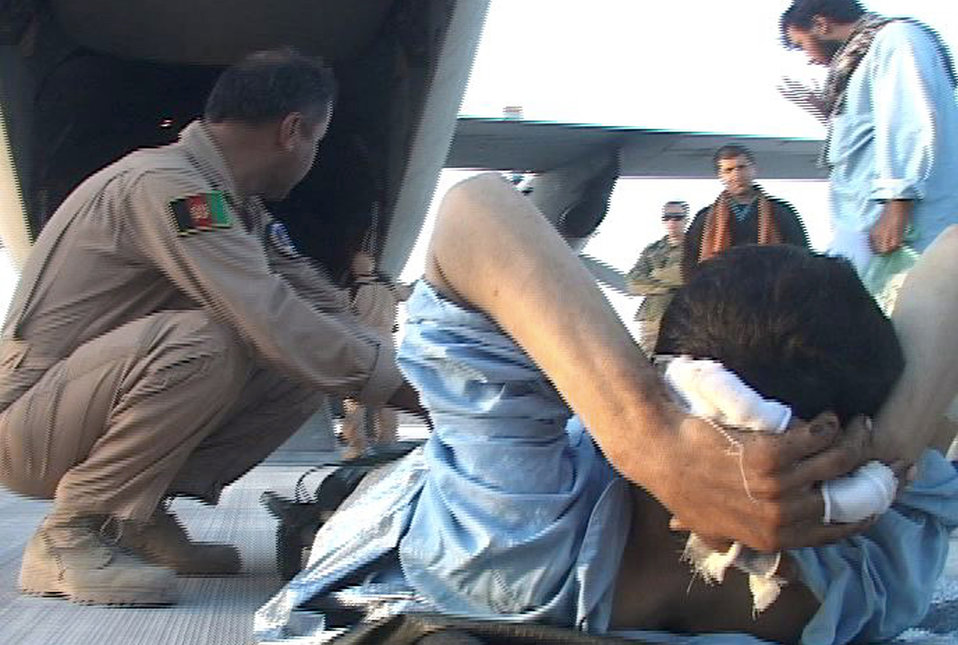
Saving lives

Afghan airmen prepare to load an injured Afghanistan National Security Forces soldier onto a C-27 Spartan aircraft Jan. 26, 2011, for a medical evacuation flight to Kabul, from Kandahar Airfield, Afghanistan.